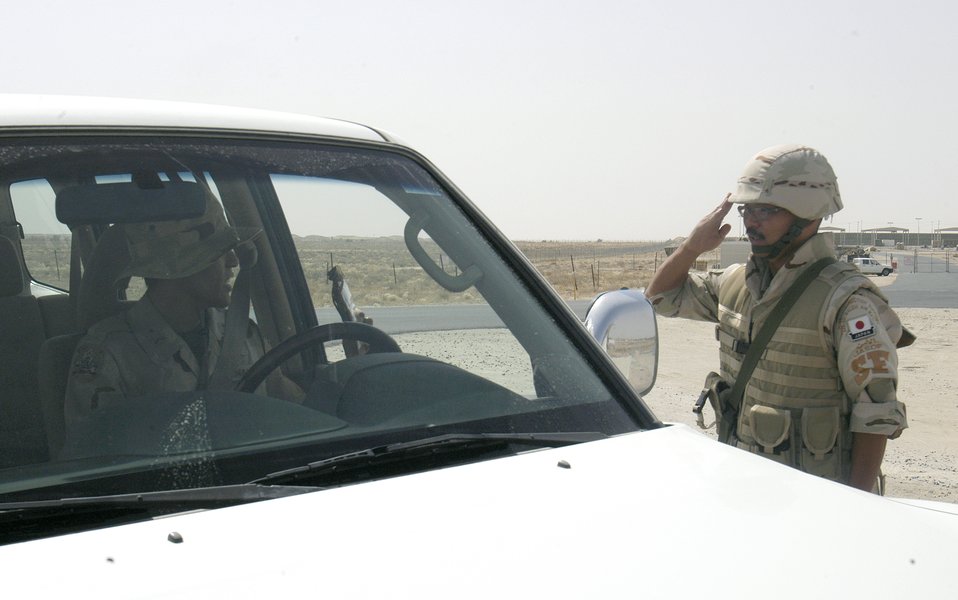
Japanese military key member of coalition

A Japan Air Self-Defense Force security forces troop salutes and opens the gate to the flightline. There are about 200 JASDF members with the Iraq Reconstruction Support Airlift Wing at a forward operating base in Southwest Asia.